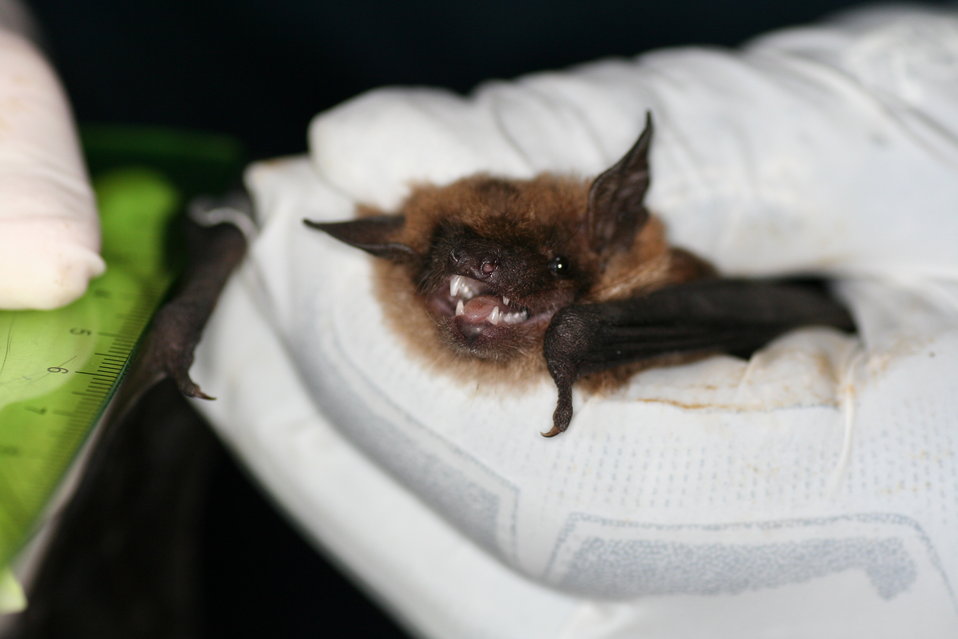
measuring forearm

measuring the forearm of a big brown bat